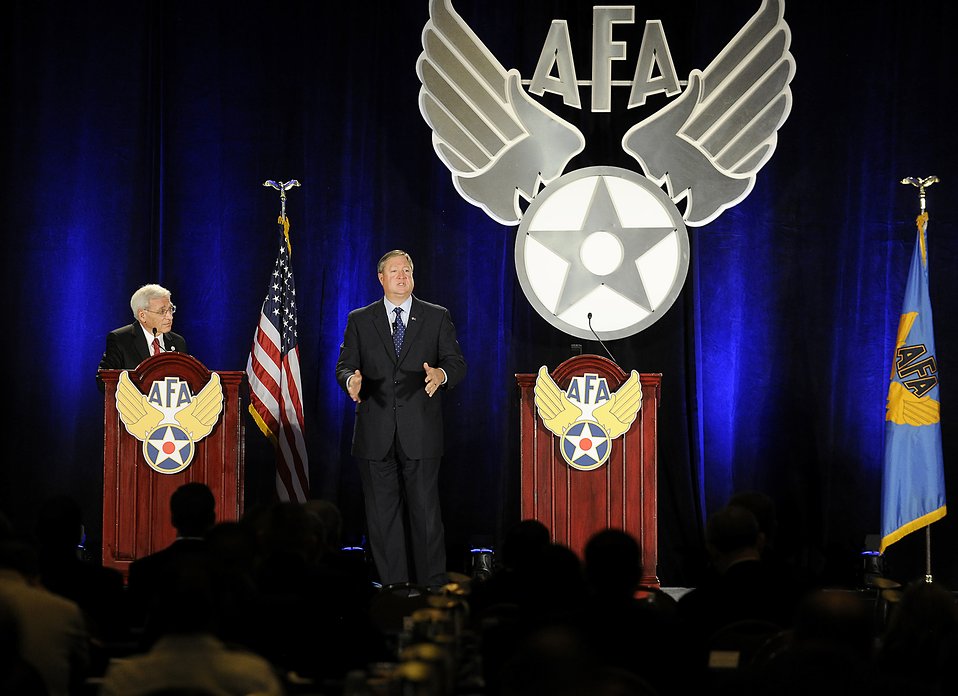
SecAF: Cyberspace is an Air Force priority

Secretary of the Air Force Michael Donley speaks to Airmen, industry officials and Air Force Association members March 23, 2012, about Air Force cyber policy during the Air Force Association's 2012 CyberFutures Conference and Technology Exposition at National Harbor, Md.